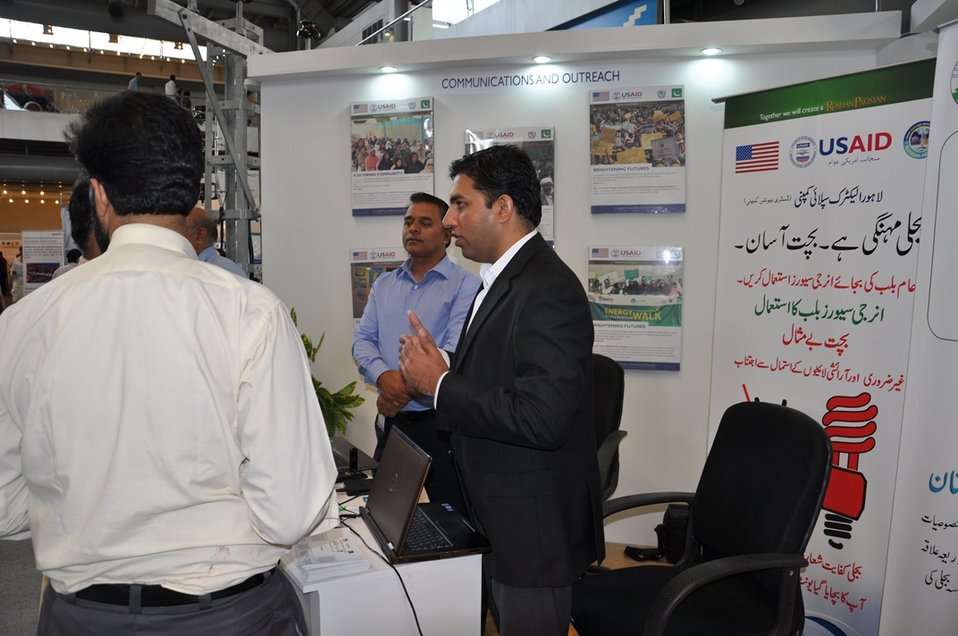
USAID participates in 11th International Pakistan Oil Gas Energy Exhibition

Visitors at the communications and outreach stall are being briefed about the PR and outreach activities being carried out for DISCOs.